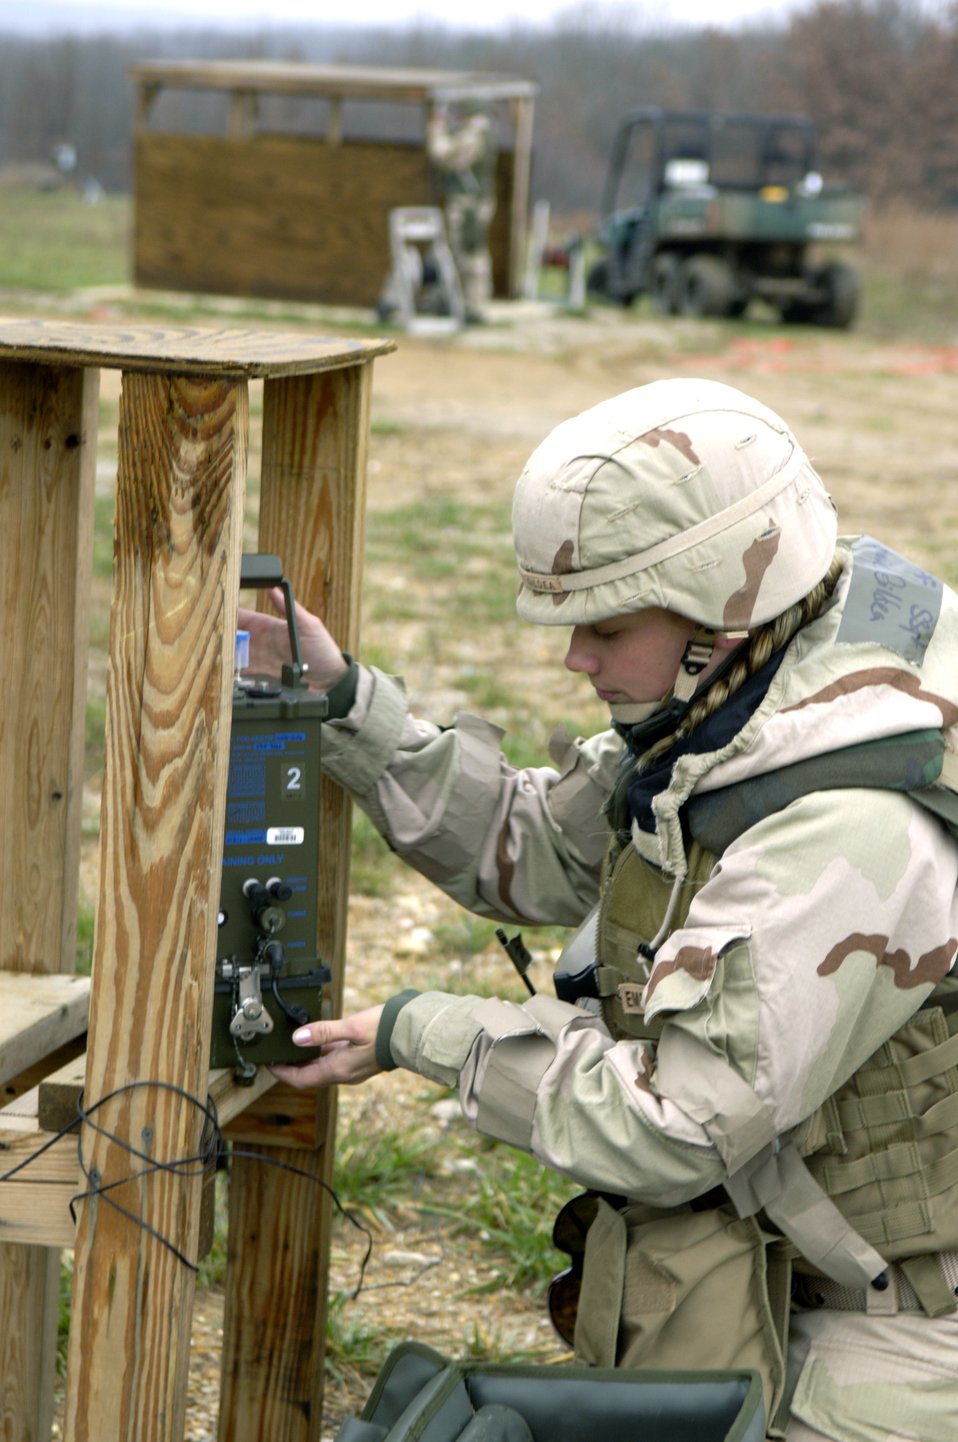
Readiness troops train for the future

Staff Sgt. Renaissance Gildea sets up threat-detection network Nov. 16 during a readiness exercise at Fort Leonard Wood, Mo. The exercise is designed to give readiness Airmen training scenarios developed from lessons learned during operations Iraqi Freedom and Enduring Freedom. The two-day exercise is the part of a two-week training class here.